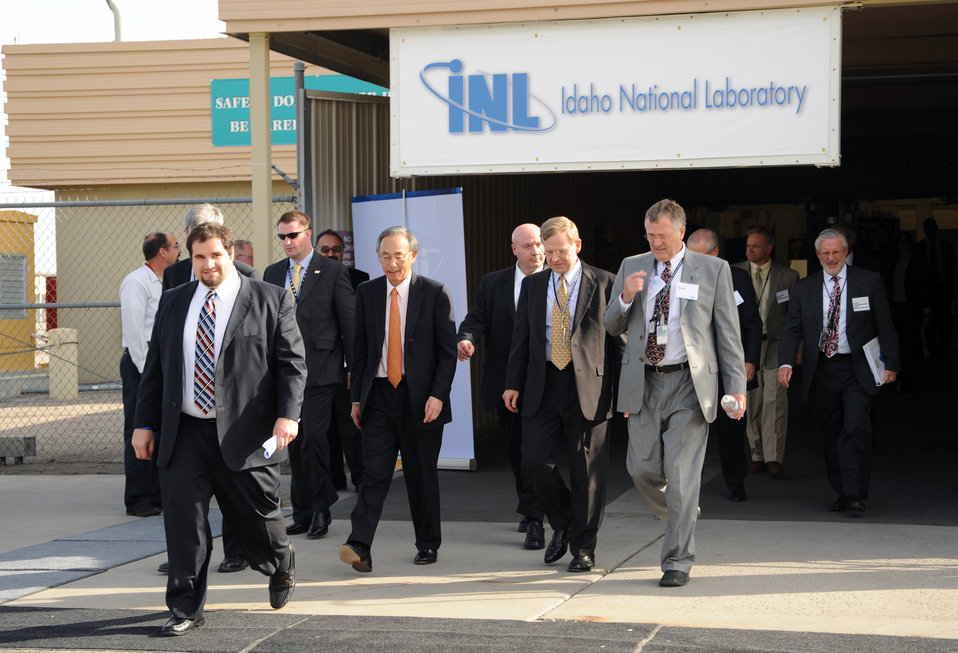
Energy Secretary Steven Chu enters the Materials and Fuels Complex at Idaho National Laboratory with John Grossenbacher, Dave Hill, Rich Provencher and Pete Lyons.
INL's Materials and Fuels Complex is located 38 miles west of Idaho Falls on the High Desert Sagebrush Steppe of the Snake River Plain in Southern Idaho. The complex is the prime testing center for advanced technologies associate with nuclear power systems. It contributes increasingly efficient reactor fuels and the important work of nonproliferation harnessing more energy with less risk.